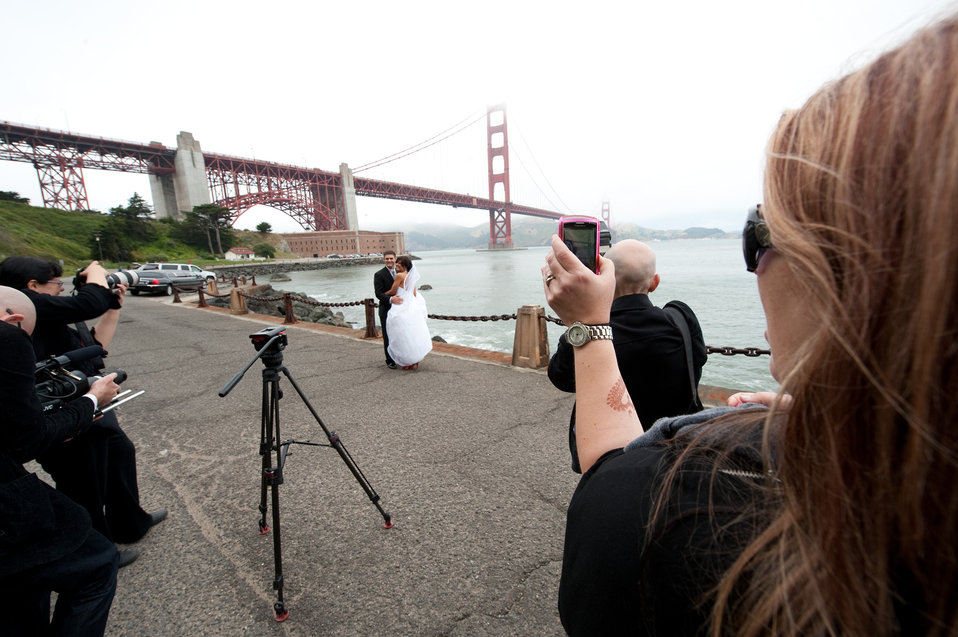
San Francisco Dream Wedding

Amy Frugoli (right), wedding planner, snaps some production photos during the wedding day of Vanessa Muza Teskey and Capt. Mike Hawkins. The wedding couple were brought to Fort Point, the classic and foggy wedding photo site near the southern anchorage of the Golden Gate Bridge in San Francisco May 14, 2010. The couple and a multimedia team were whisked by limousine to several photo locations. The two won the San Francisco Dream Wedding Giveaway with viewer votes. Mrs. Hawkins has been diagnosed with stage IV Hodgkin's lymphoma. Vendors donated $100,000 of goods and services to the couple's wedding day.